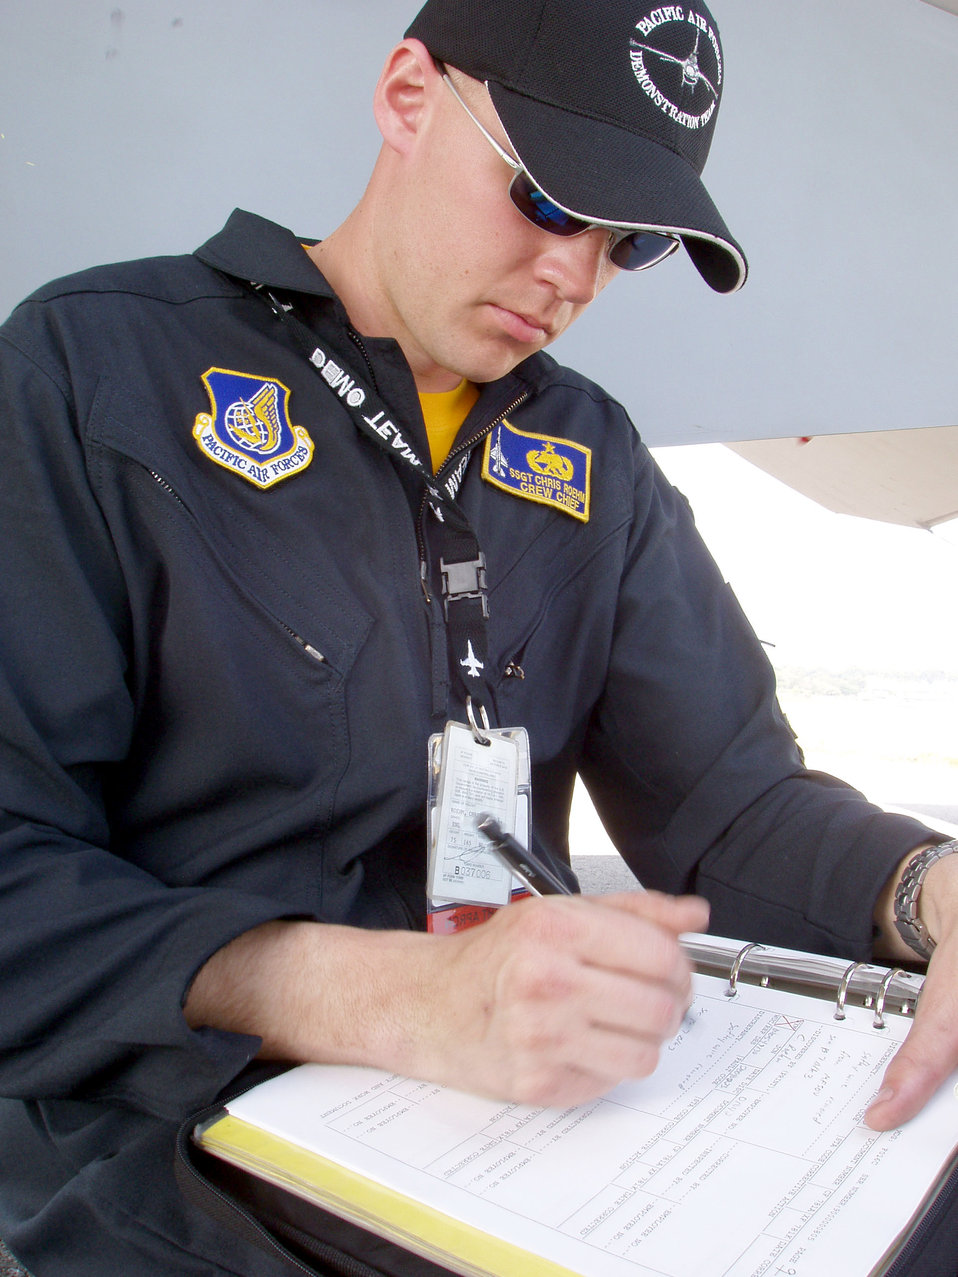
Asian Aerospace 2004

SINGAPORE -- Staff Sgt. Chris Roehm takes a break from the heat in the shadow of an F-16 Fighting Falcon's wing to complete his post-flight paperwork. Sergeant Roehm, along with the Pacific Air Forces F-16 demonstration team, is here as part of Asian Aerospace 2004, an international air show held every two years. He is assigned to the 14th Fighter Squadron at Misawa Air Base, Japan.